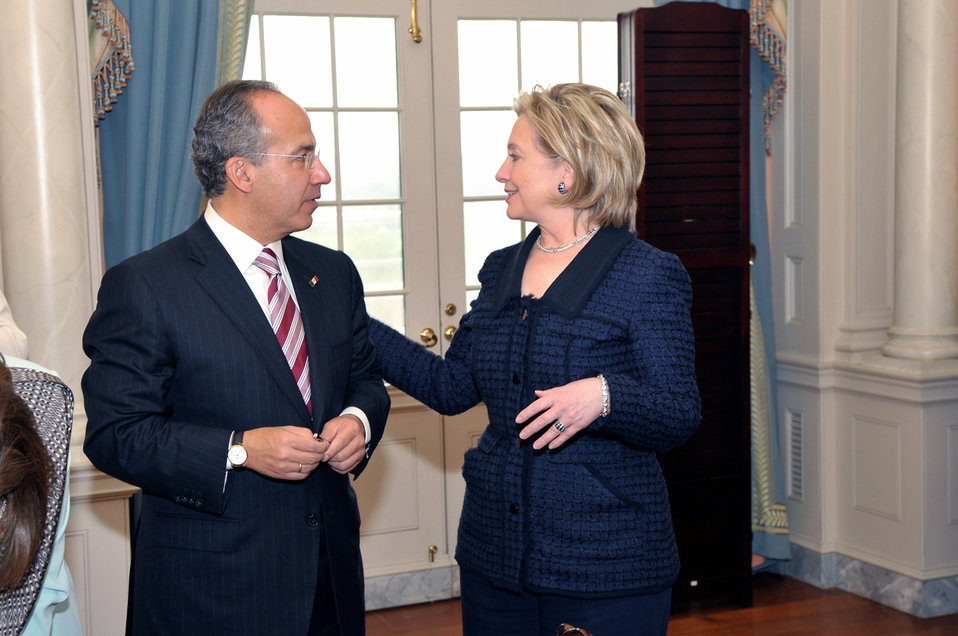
Secretary Clinton Hosts Lunch for Mexican President

U.S. Secretary of State Hillary Rodham Clinton speaks with Mexican President Felipe Calderón prior to a lunch for the President and Mrs. Margarita Zavala hosted by Secretary Clinton, U.S. Vice-President Joe Biden and Dr. Jill Biden at the U.S. Department of State in Washington, DC May 19, 2010.